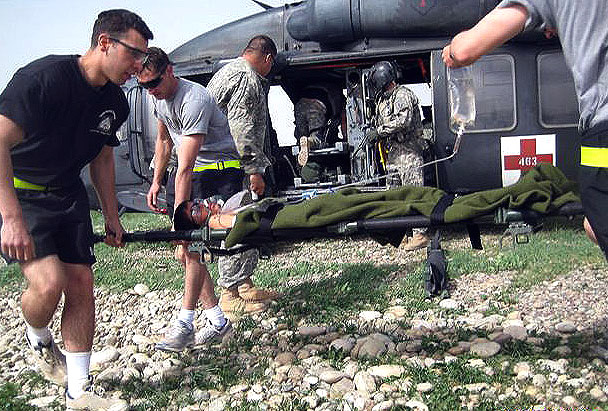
Soldiers, Airmen save Iraqi teen injured by bomb

Army members load an Iraqi teenager injured by an improvised explosive device onto a medevac helicopter for transport to a medical facility at Kirkuk Air Base, Iraq. The quick response of Army and Air Force members saved the boy's life.